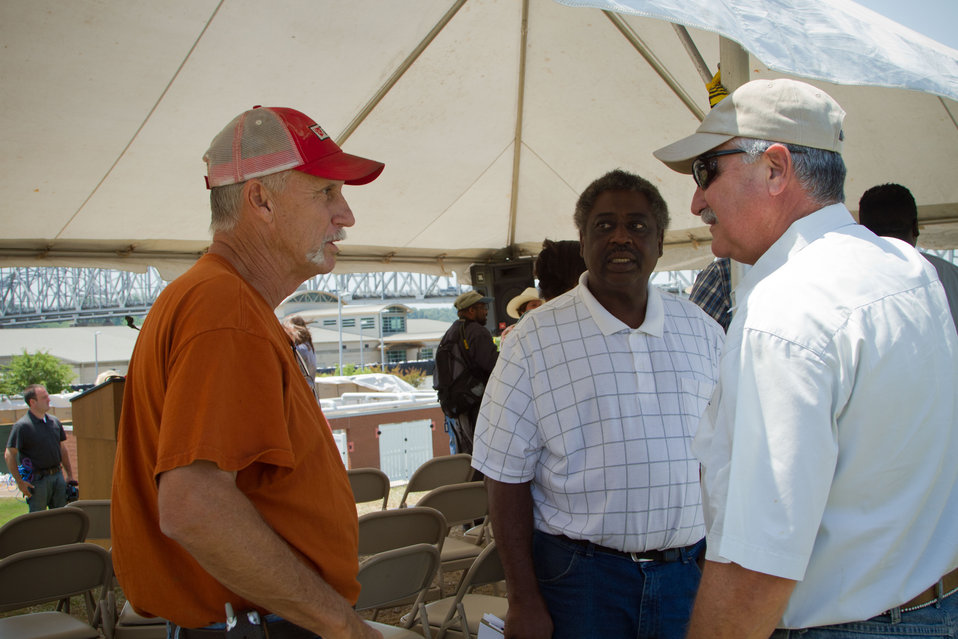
U.S. Department of Agriculture Ferriday Field Office District Conservationist Ben Taunton (right) is approached by farmers following an outreach event held on the Mississippi River levee at Vidalia, LA, on Thursday, May 19, 2011.